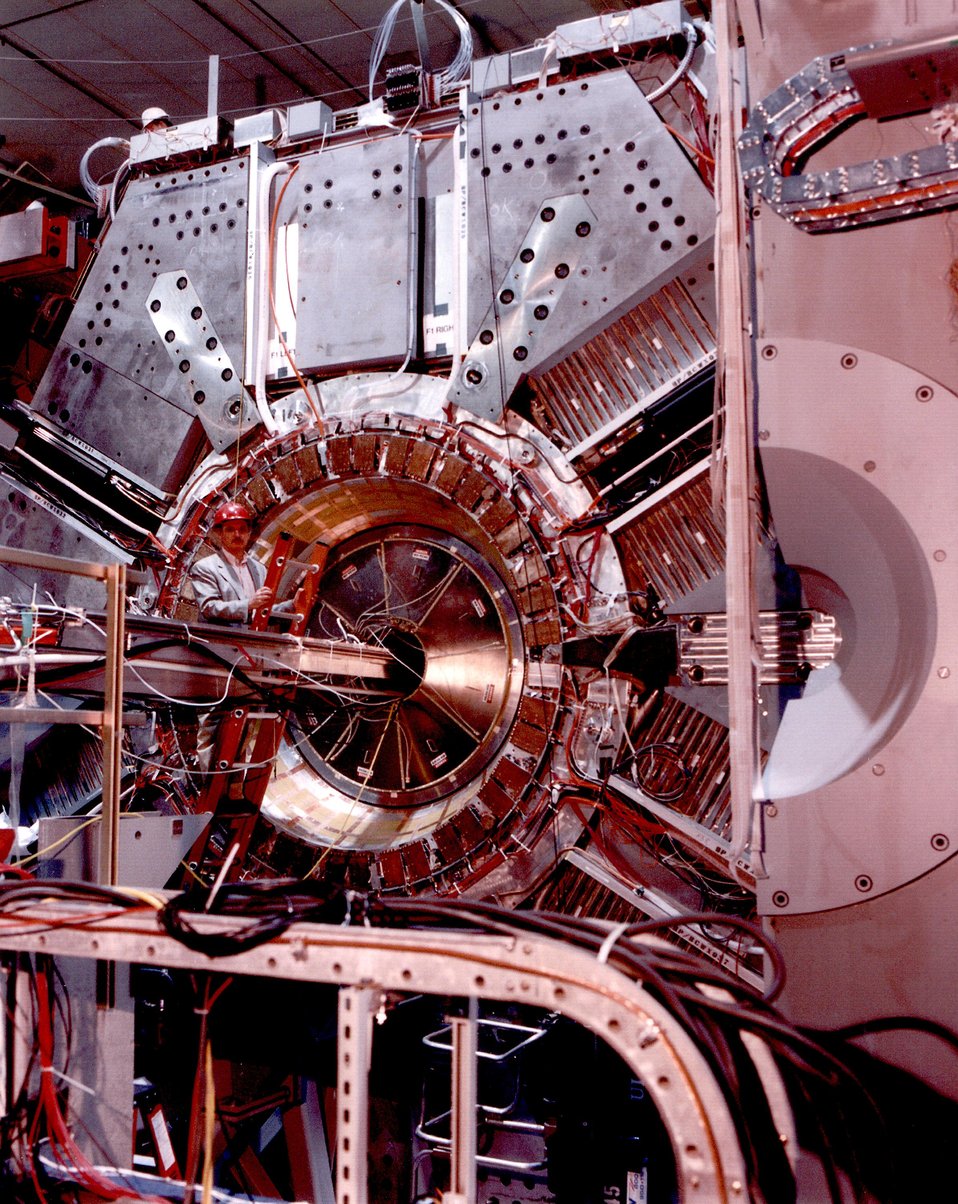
BABAR SPOKESMAN D. HITLIN AT THE CALORIMETER OF THE BABAR DETECTOR.

THIS END VIEW OF SLAC'S BABAR DETECTORS SHOWS SOME OF THE CONCENTRIC LAYERS USED TO TRACK PARTICLES.